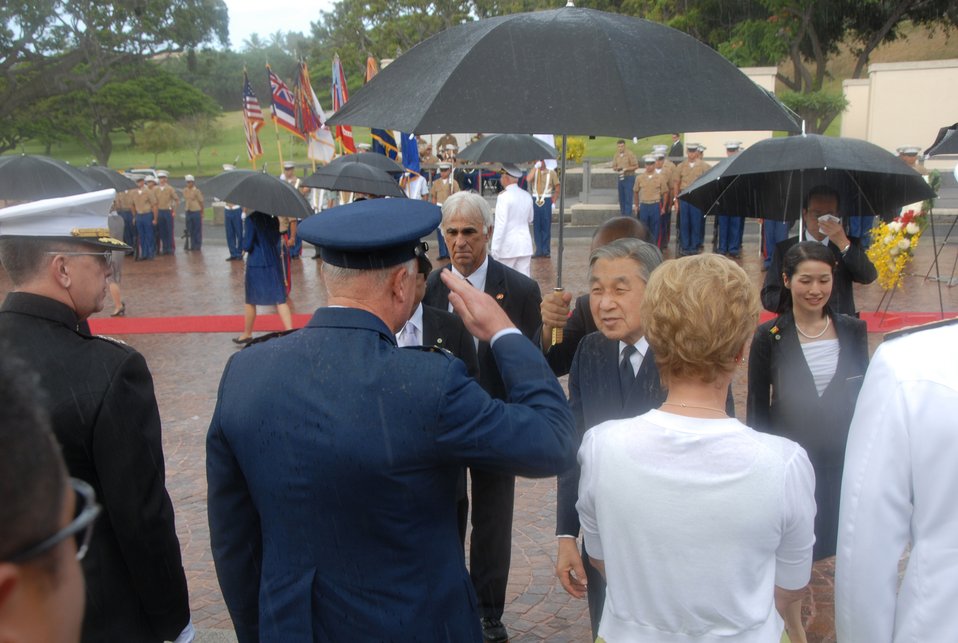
Japanese royalty honors America's fallen

Pacific Air Forces Commander Gen. Howie Chandler greets Emperor of Japan Akihito during a visit July 15 to the National Memorial Cemetery of the Pacific at Punchbowl Crater, Hawaii. The Emperor and his wife, Empress Michiko, paid homage to those interred at the cemetary by laying a wreath. More than 50,000 service men and women are interred at the cemetery.